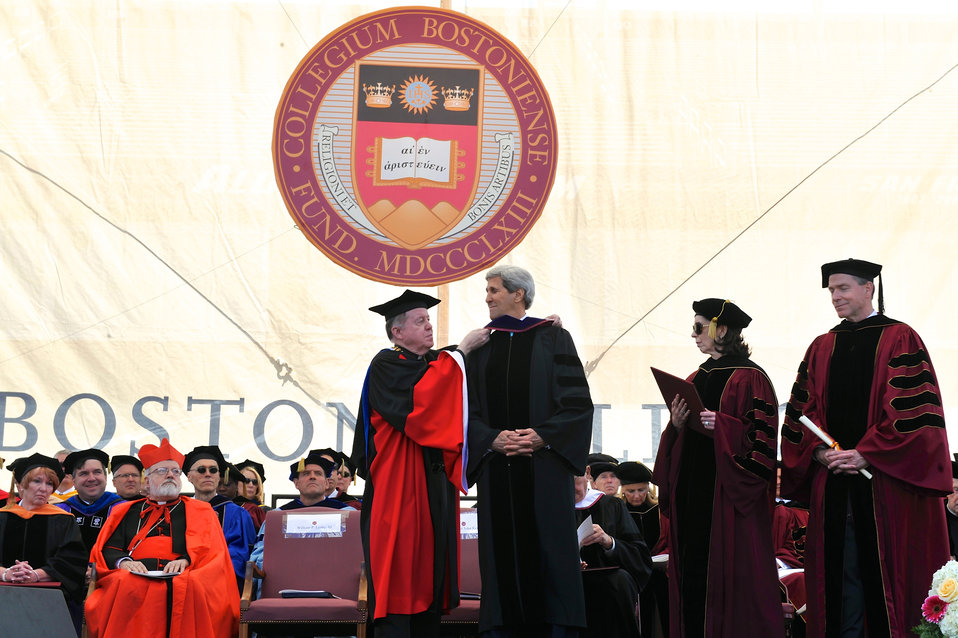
Secretary Kerry Receives Honorary Degree During Boston College Commencement

U.S. Secretary of State John Kerry, a 1976 graduate of Boston College Law School, smiles at B.C. President William Leahy after he placed an academic hood on him as the Secretary received an honorary degree during commencement exercises in Boston, Massachusetts, on May 19, 2014.